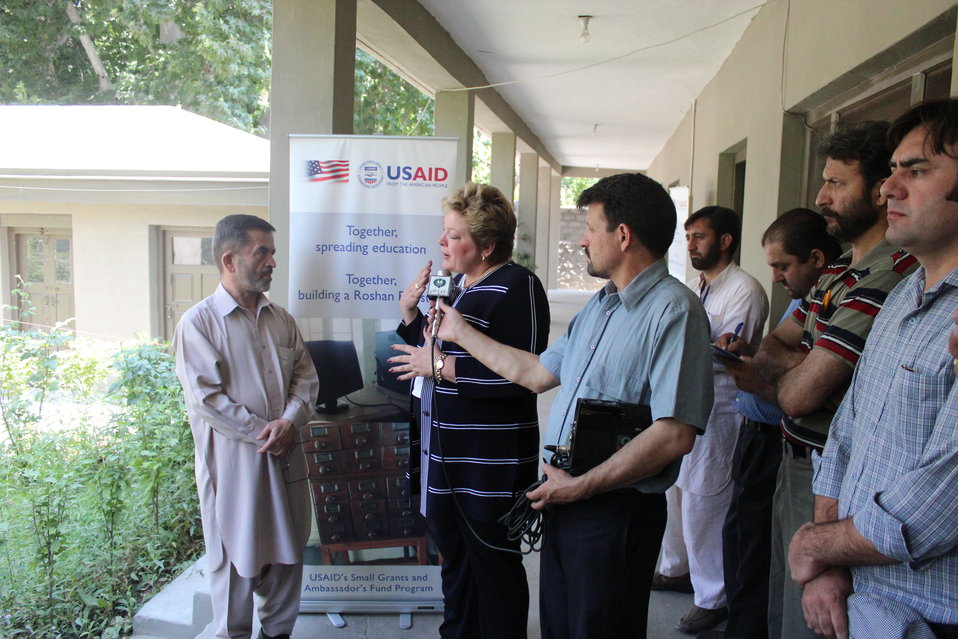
Deputy Director Karen Freeman’s visit to Gilgit Library

Karen Freeman visited the Municipal Gilgit Library on Monday, July 9. She was accompanied by other USAID staff and the staff from the Ambassador’s Fund Program. A the library, she met with Deputy Commissioner of Gilgit, Mr. Arqam and library staff, toured a photo display, and had an informal discussion with the library staff and community members about the USAID-funded project. Library staff showed the equipment funded by USAID (computers, internet, scanners, etc). The visit concluded by a Q & A session with media.